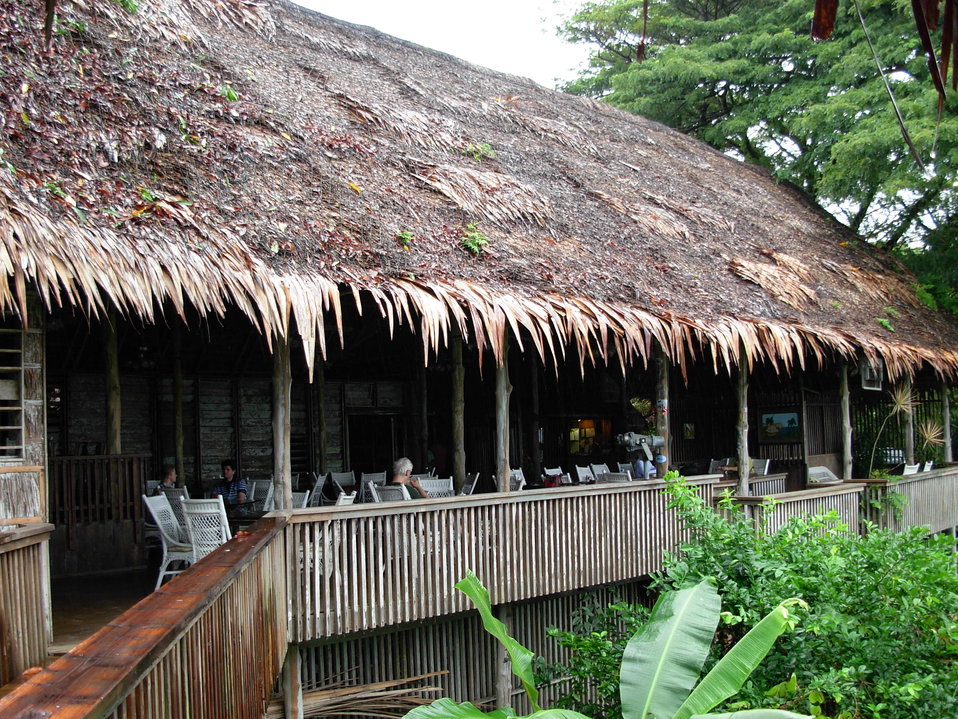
The veranda of a Pohnpei restauarant